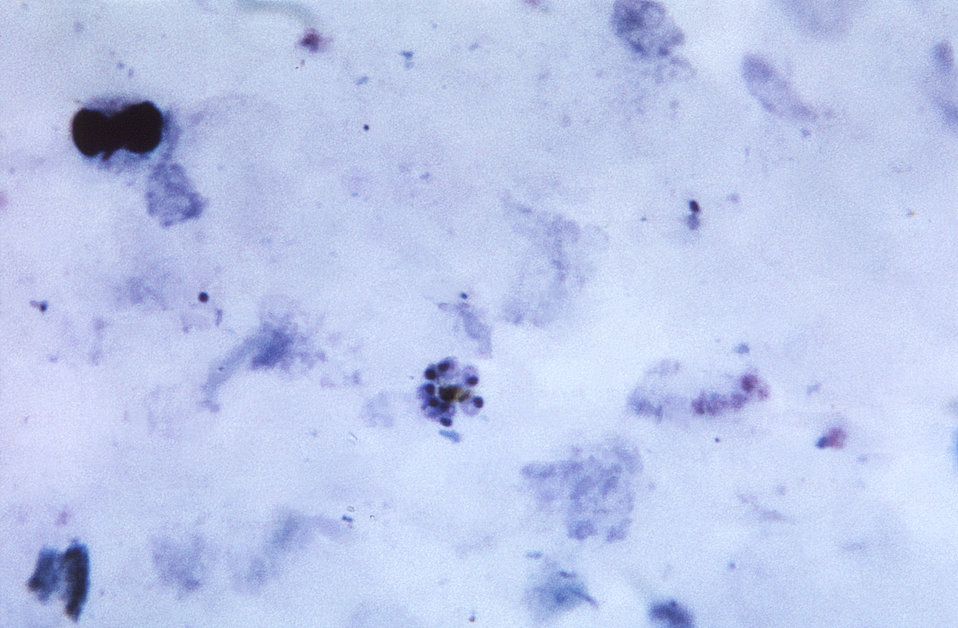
This thick film blood smear micrograph depicts a mature Plasmodium malariae schizont, which contained what appeared to be 8 merozoites arranged in a rosette pattern within its cytoplasm.